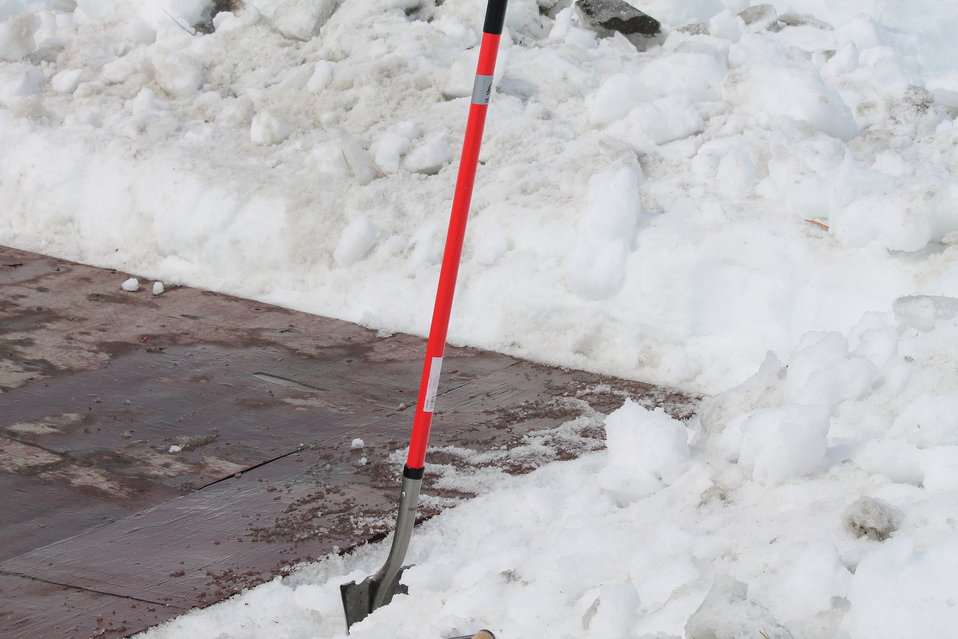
Pre-breakup camp

Going out before break-up means dealing with snow and ice. Weather port and tent bases need to be uncovered in order to set them up.

USFWS Yukon Delta NWR